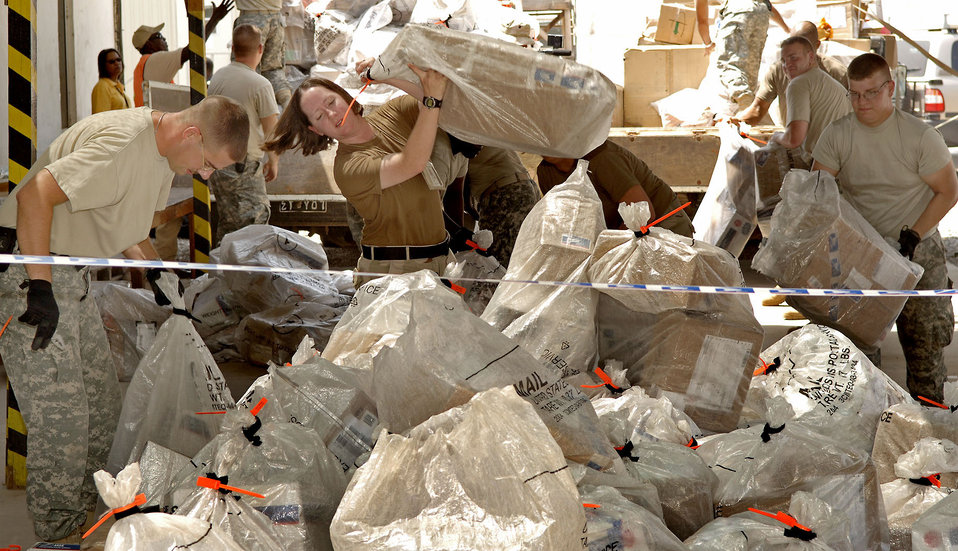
JTF Horn of Africa

Airmen, Soldiers, Sailors and Marines work together to get mail sorted at Camp Lemonier in Djibouti, Horn of Africa. The postal center supports more than 1,500 people in eight countries.